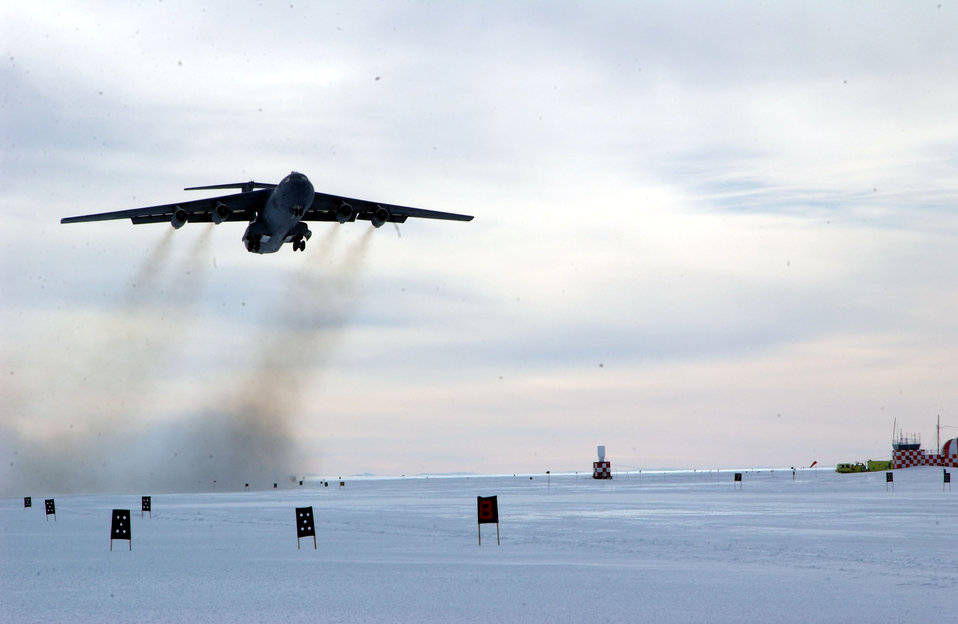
Operation Deep Freeze

MCMURDO STATION, Antarctica -- A C-141 Starlifter takes off from here after delivering cargo and people for the National Science Foundation. Starlifters from the 445th Airlift Wing at Wright Patterson Air Force Base, Ohio, and the 452nd Air Mobility Wing at March Air Reserve Base, Calif., were here supporting Operation Deep Freeze.